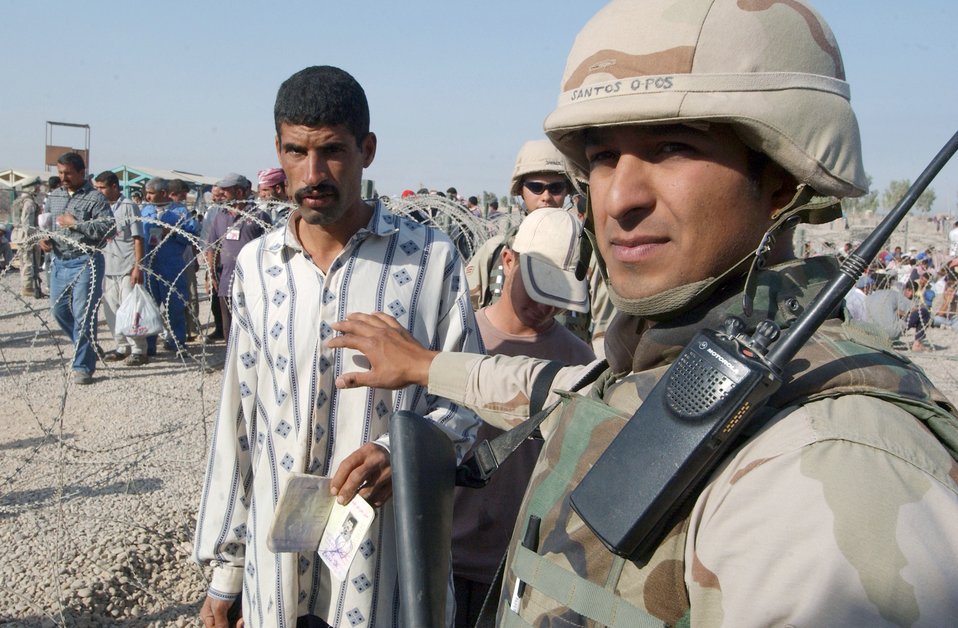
Escorts keep watch over foreign workers

BALAD AIR BASE, Iraq -- Senior Airman Alfonso Santos organizes a group of workers while they inprocess here Oct. 4. He is a security escort with the 332nd Expeditionary Civil Engineer Squadron here and is deployed from Luke Air Force Base, Ariz.